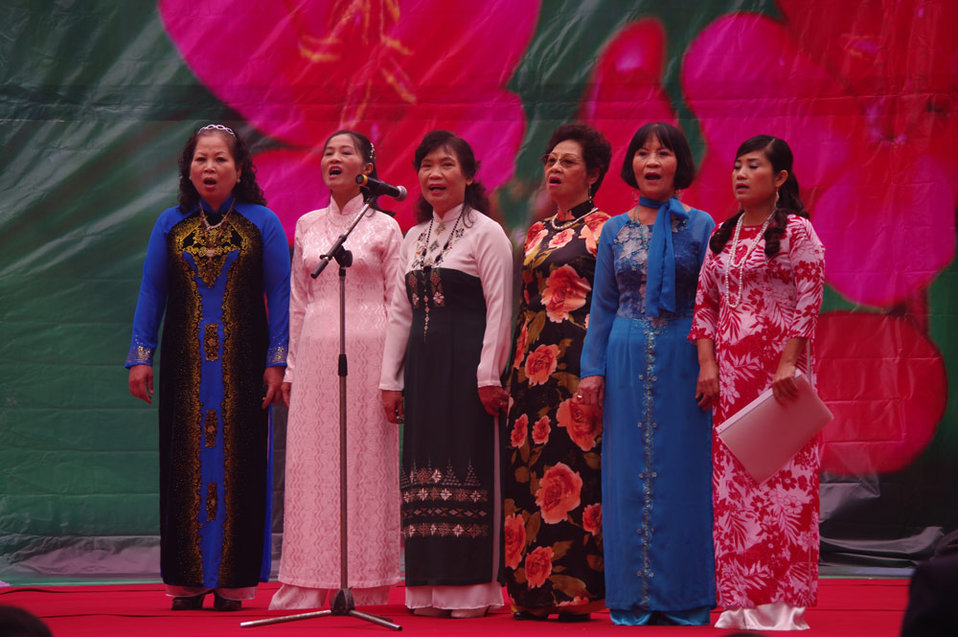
International Day of Persons with Disabilities 2010